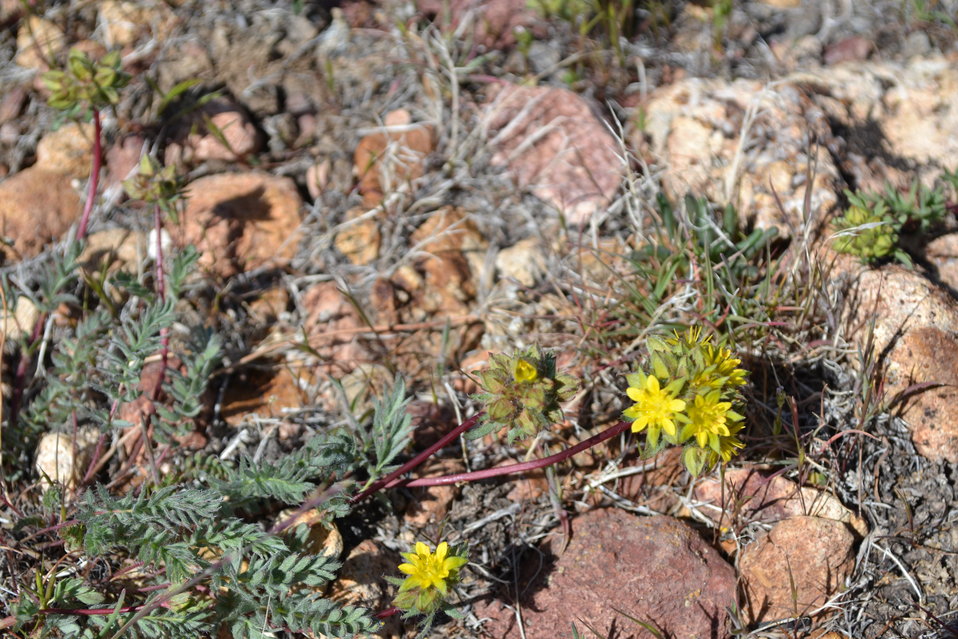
Webber's ivesia